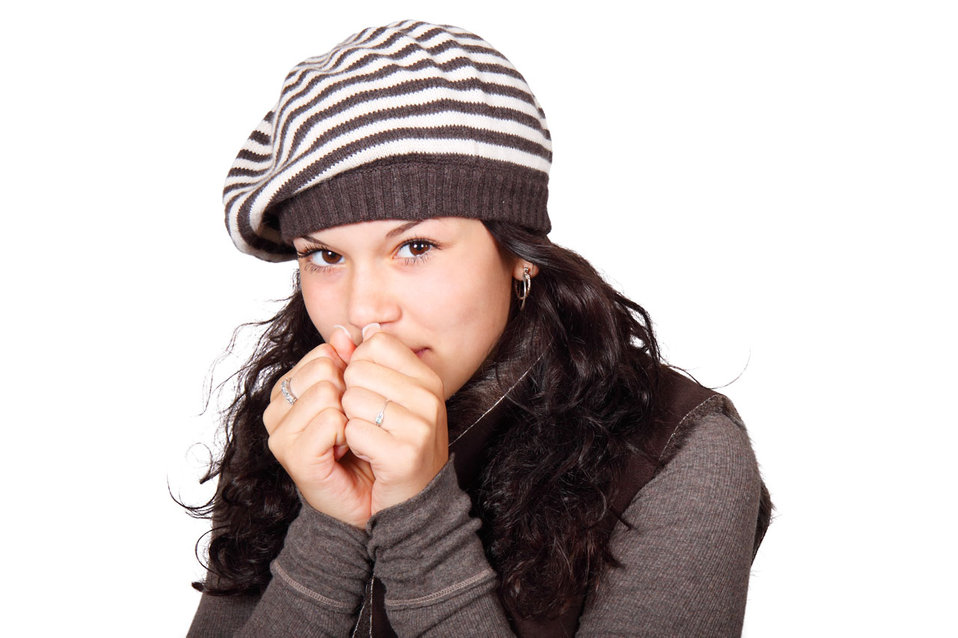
Freezing woman

Freezing young woman isolated on white background.